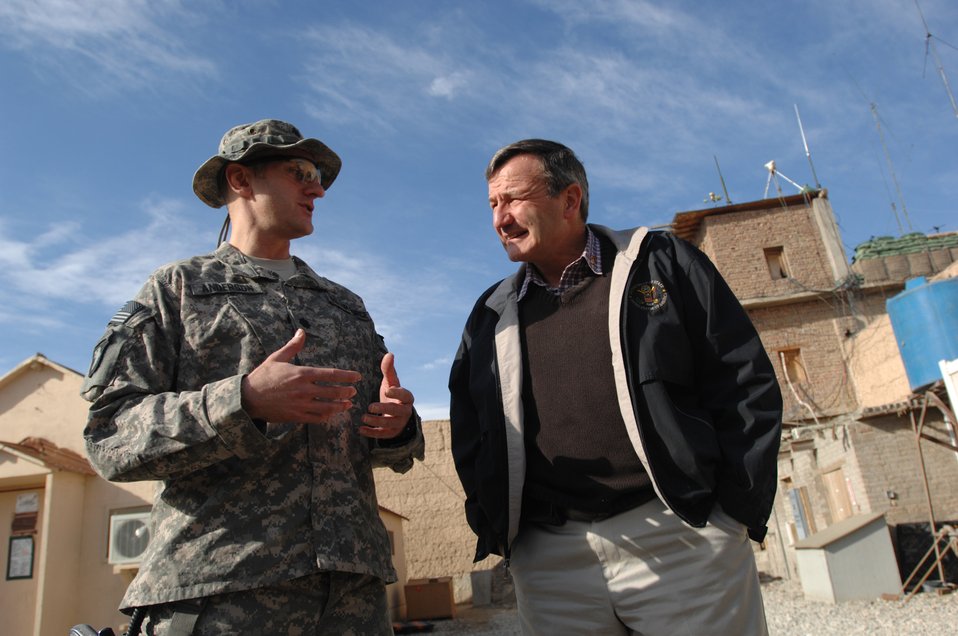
110209sv Shah063

U.S. Ambassador Karl W. Eikenberry talks with Lt. Col. Michael Anderson at FOB Connolly in Nangarhar province on Wednesday, February 9, 2011. (S.K. Vemmer/Department of State)